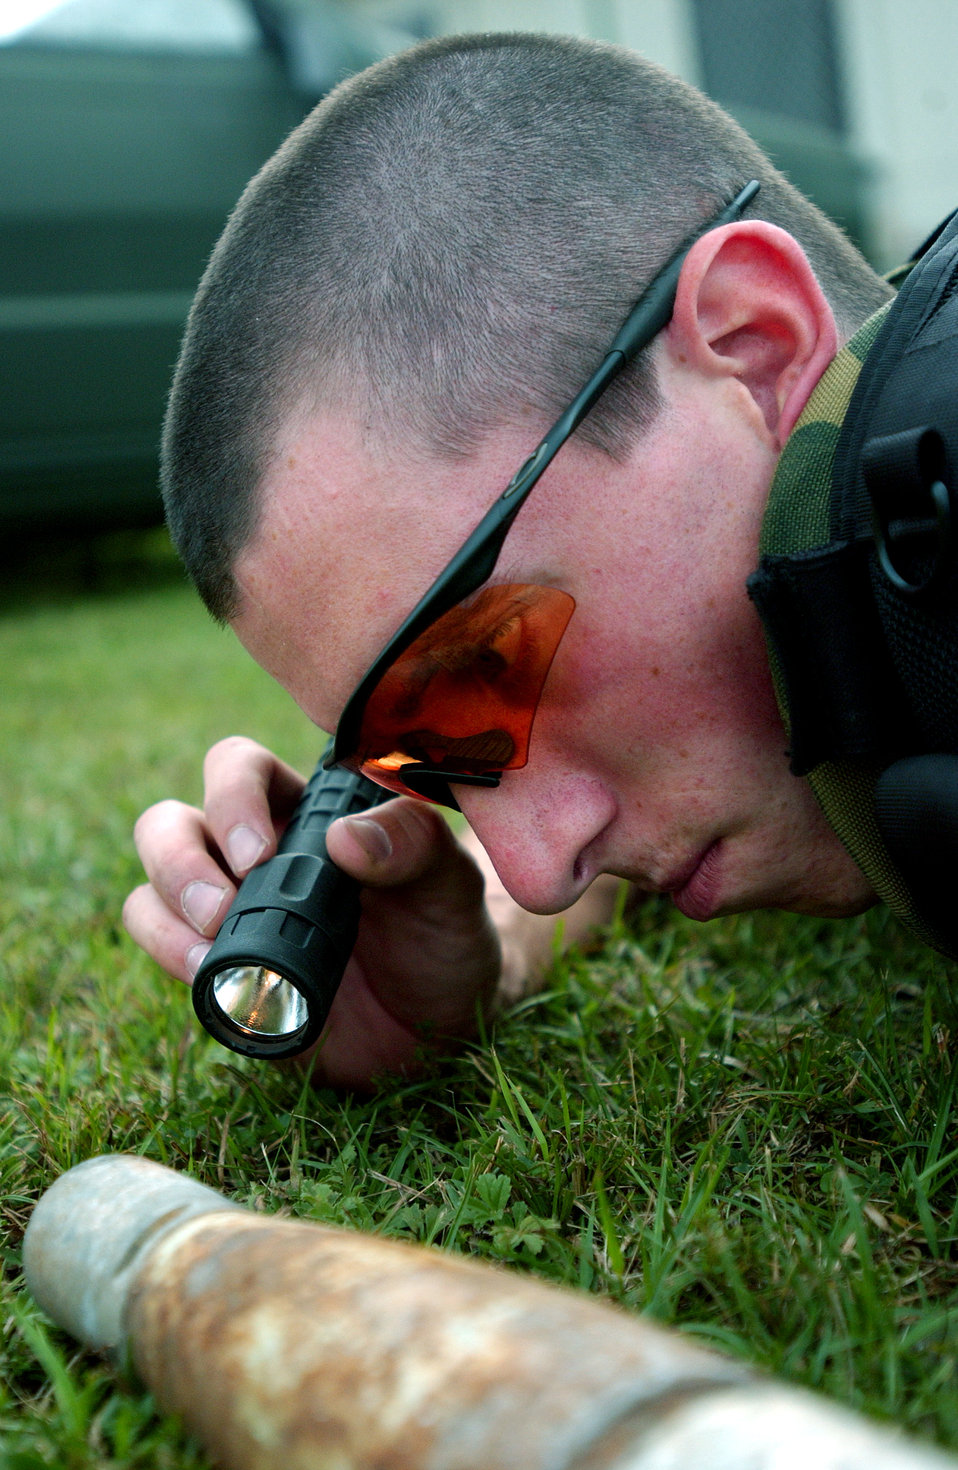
A sharp eye

AVIANO AIR BASE, Italy -- Airman 1st Class Jedd Lucas closely analyzes unexploded ordnance during training here Aug. 24. The explosive ordnance disposal flight has training exercises biweekly. Airman Jedd is assigned to the 31st Civil Engineer Squadron's EOD flight.